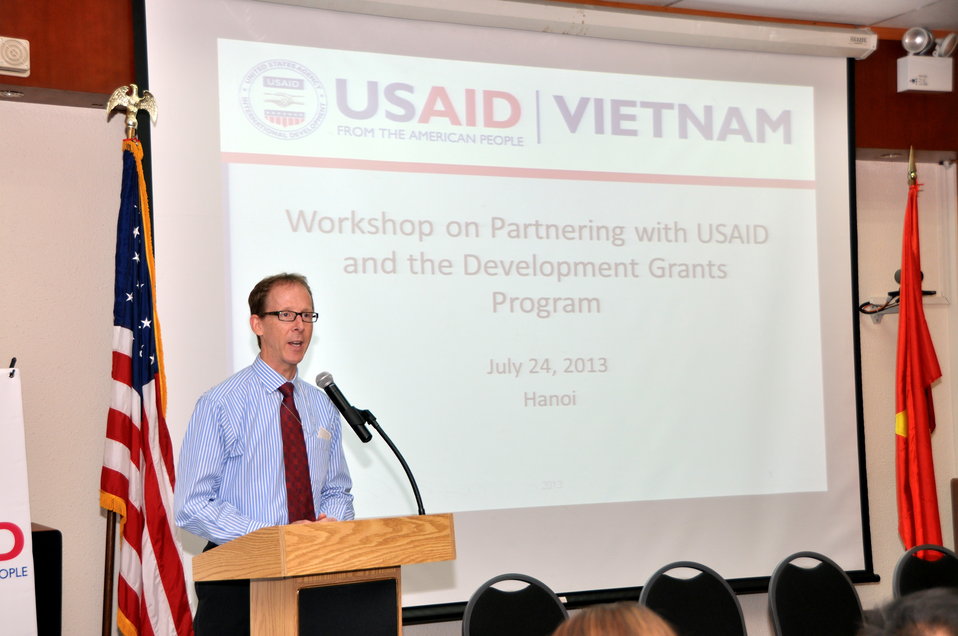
Development Grants Program Workshop in Hanoi

USAID Mission Director Joakim Parker addresses 140 representatives of primarily Vietnamese nongovernmental organizations (NGOs) to expand partnerships through USAID’s Development Grants Program (DGP), which fosters sustainable grassroots development by supporting development initiatives driven by local organizations.

July 24, 2013